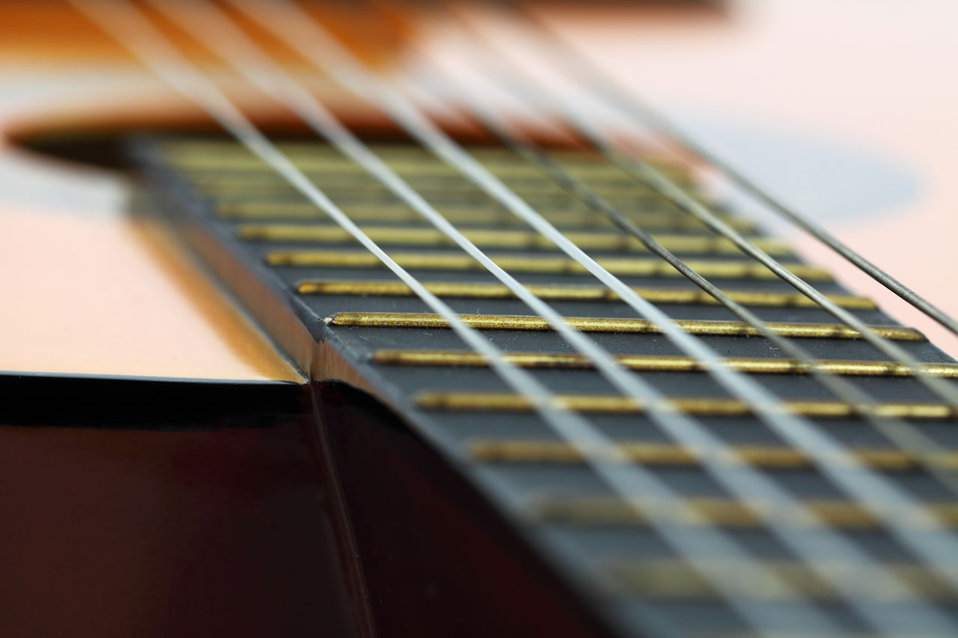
Guitar strings

Close up on guitar strings.